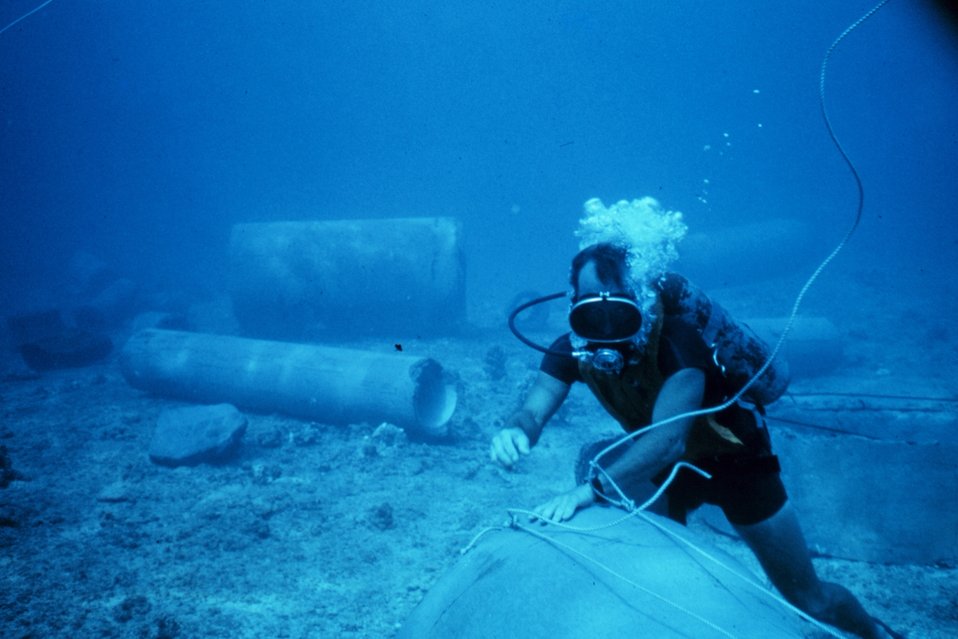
Attaching 1/4 square meter grid to pipes by rope. The method did not work and eventually a hole was drilled in the four corners of the grid area, a stainless steel screw was attached, and nylon string was strung between the four corners.